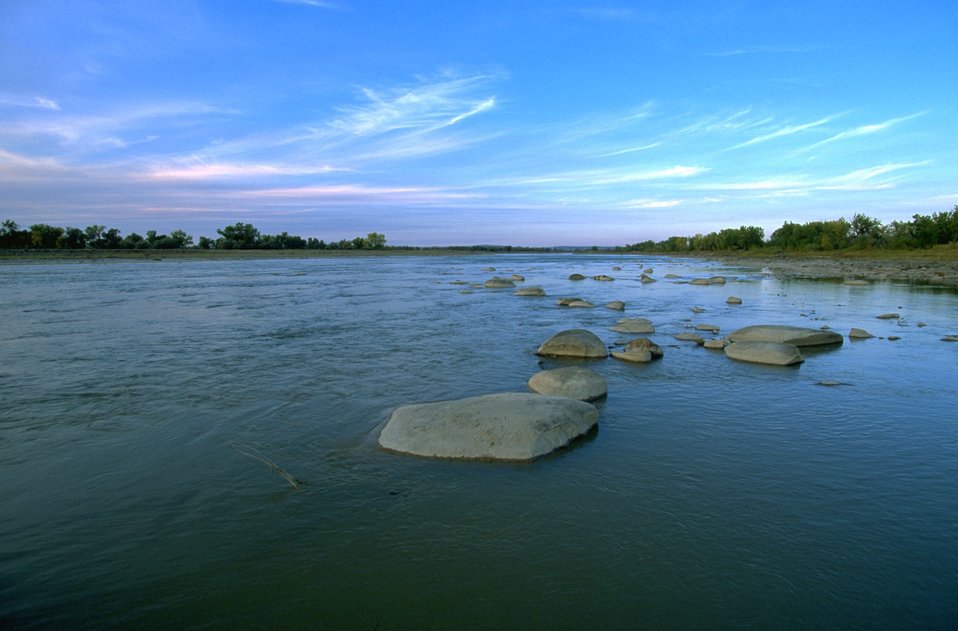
Yellowstone River near Matthews Recreation Site